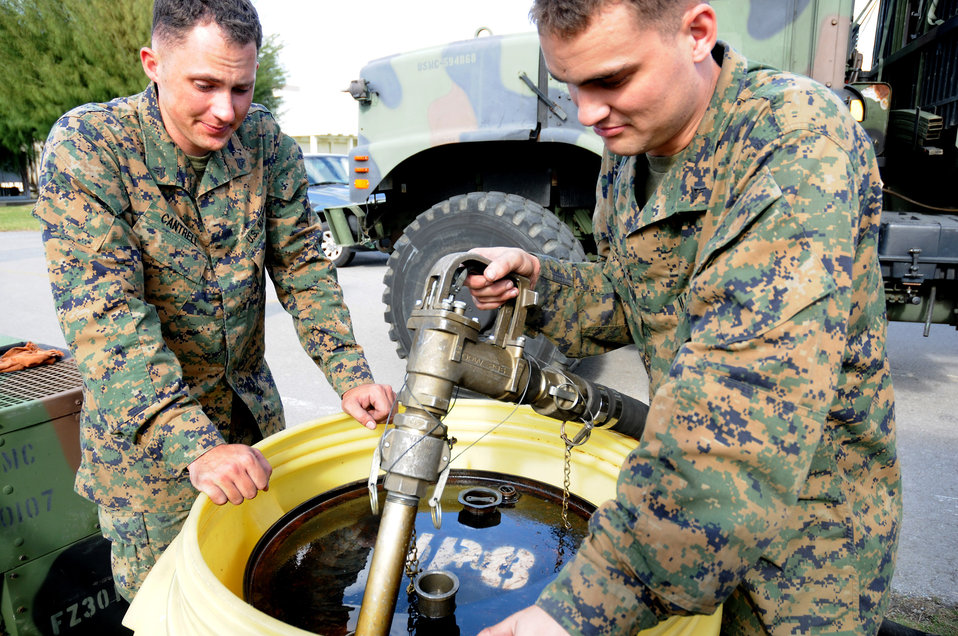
Airmen, Marines join forces during exercise at Kadena

Marine Cpl. Matthew Cantrell (left) and Marine Lance Cpl. Ryan Zimmerman refuel a generator during Exercise Beverly High 09-01 Dec. 4 at Kadena Air Base, Japan. The joint Air Force-Marine Corps exercise, tested the ability of both services to execute their critical missions under simulated combat conditions. The Marines are from the both from the Marine Wing Support Squadron-172.